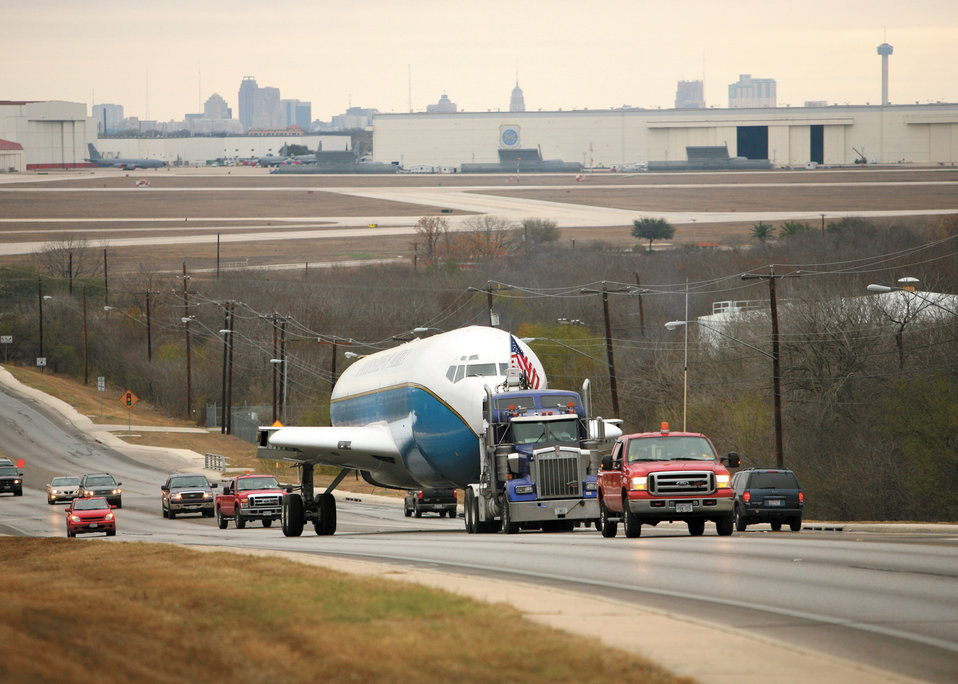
Speckled Trout reeled in to new home

The Speckled Trout, a Boeing KC-135, is towed down a street to its new home at Lackland Air Force Base, Texas, Feb. 15. The aircarft arrived at Lackland in June 2008 and was converted into a trainer for aircrews, including refueling boom operators, loadmasters, flight attendants and airborne missions systems specialists.